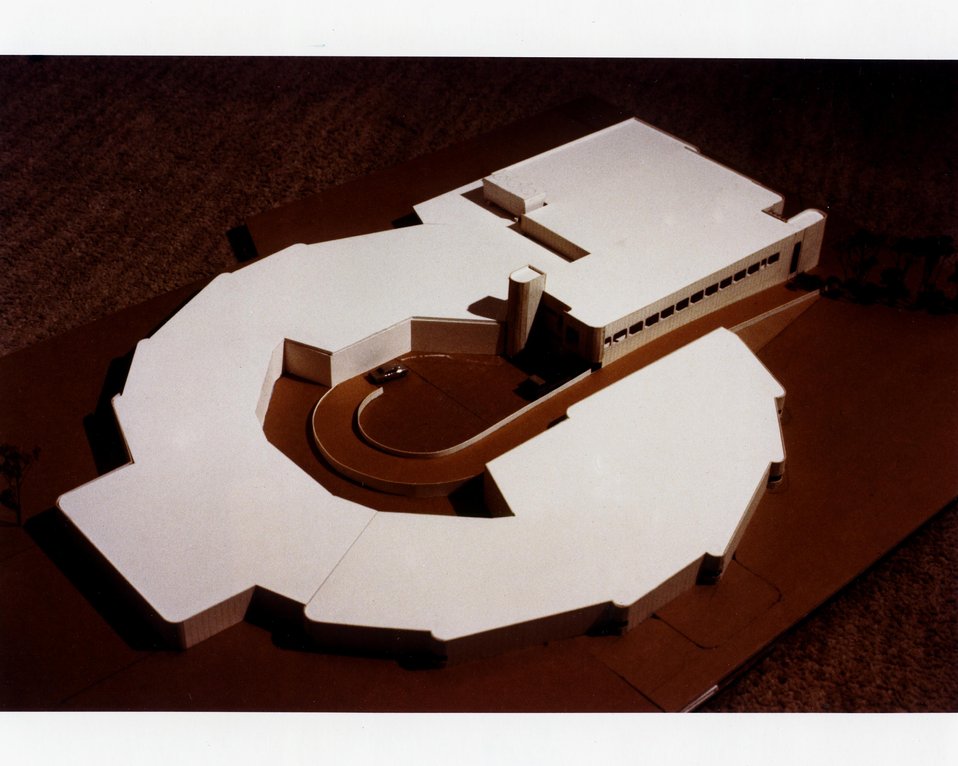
ARCHITECT'S MODEL OF NATIONAL SYNCHROTRON LIGHT SOURCE.

THE NSLS WILL ACCELERATE AND STORE ELECTRONS AT A SPEED CLOSE TO THAT OF LIGHT TO PRODUCE AN ENTIRE SPECTRUM OF RADIATION, FROM INFRARED THROUGH X-RAYS, FOR UNIQUE APPLICATIONS IN MANY FIELDS OF SCIENCE. THE FACILITY WILL CONSIST OF TWO ELECTRON STORAGE RINGS. THE SMALLER RING WILL ACCELERATE ELECTRONS TO 700 MILLION ELECTRON VOLTS TO PRODUCE ULTRAVIOLET RADIATION, AND THE LARGER RING WILL ACCELERATE ELECTRONS TO 2500 MILLION ELECTRON VOLTS TO PRODUCE X-RAYS. THE ULTRAVIOLET LIGHT CAN BE USED TO STUDY: CHEMICAL REACTIONS AND STRUCTURES, THE PROPERTIES OF PURE METALS, ALLOYS, AND INSULATING MATERIALS, AND THE TRANSFER OF ENERGY IN BIOLOGICAL SYSTEMS. X-RAY LITHOGRAPHY MAY BE USED BY THE ELECTRICAL INDUSTRY IN THE PRODUCTION OF MICROSCOPIC PRINTED CIRCUITS FOR COMPUTERS AND MICROPROCESSORS. X-RAY MICROSCOPY COMPLEMENTS ELECTRON MICROSCOPY, PERMITTING OPERATIONS THAT WOULD BE IMPOSSIBLE WITH AN ELECTRON MICROSCOPE.